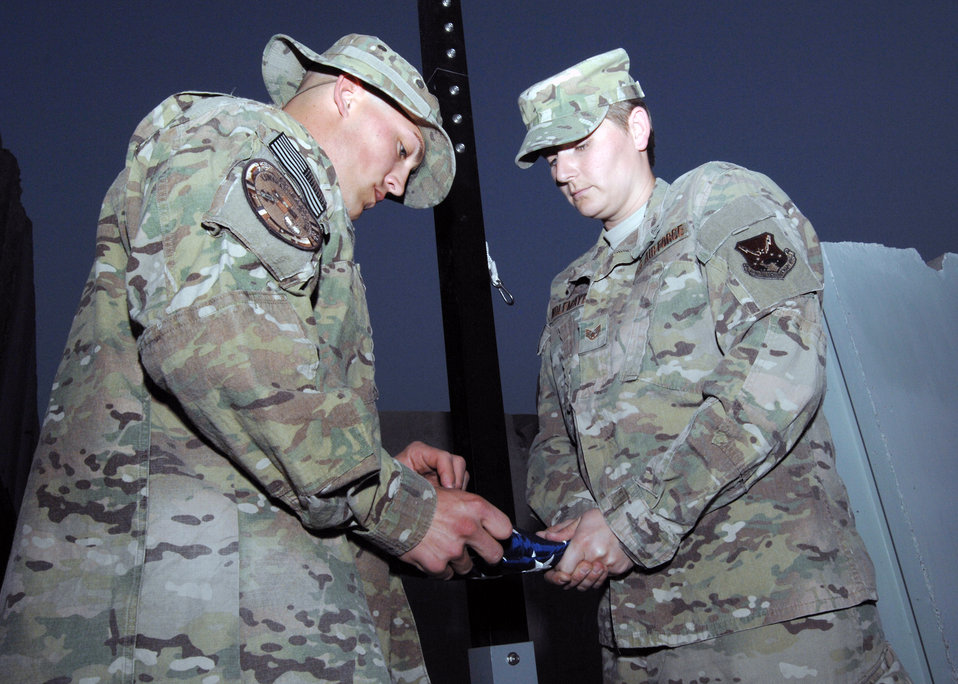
Raise the Flag

Staff Sgt. Michael Newman and Staff Sgt. Kristy Wolfmayer, both deployed from Travis Air Force Base, Calif., fold the flag during a retreat ceremony at Kandahar Airfield, Afghanistan, Aug 4, 2012. Newman and Wolfmayer are assigned to the 651st Expeditionary Aeromedical Evacuation Squadron.